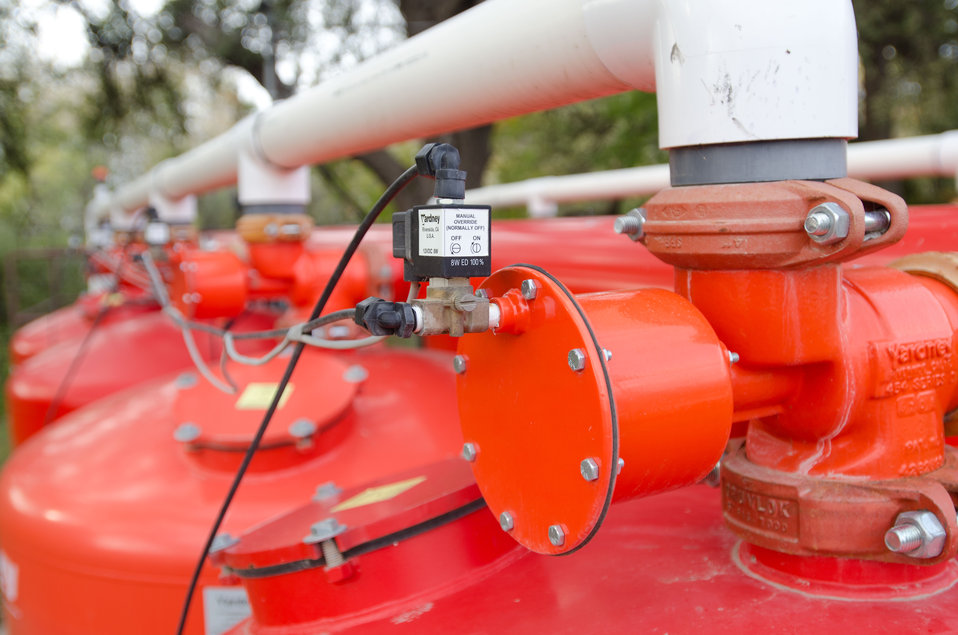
Sand filtration tanks installed in 2010 at Arrowhead Farms of Crystal City, TX, on Friday, December 9, 2011, has been owned by Mr. Akram Mohammad, a pecan farmer since 2005. The 719 acre farm with 10,000 trees, features some orchards with underground micro irrigation system that feeds water to the roots of 4,380 pecan trees on 146 acres. Mr. Mohammad said, “USDA (U.S. Department of Agriculture) was essential to my business and trees surviving the recent exceptional drought. The trees were stress free thanks to underground micro-irrigation. This is essential to the future growth of Texas agriculture and good for America.” U.S. Department of Agriculture’s (USDA) Environmental Quality Initiative Program (EQIP) awarded Mr. Mohammad a $130,000 grant in 2008. He provided $26,000 for the balance of the $156,000 total cost to install a 146-acre underground micro-irrigation for 4,380 trees.